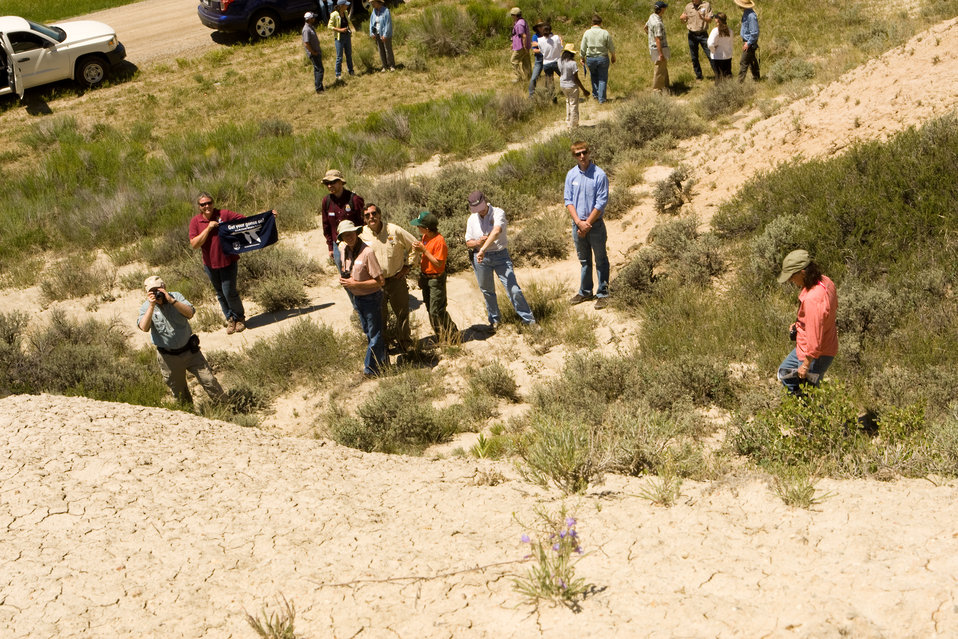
Colorado Rare Plant Conservation Initiative

The Colorado Rare Plant Conservation Initiative (RPCI) is a partnership of 23 statewide and regional agencies, private organizations, and academic institutions working to conserve 121 rare plants in Colorado. As part of these efforts the group developed the Colorado Rare Plant Conservation Strategy, developed Best Management Practices to reduce energy development impacts, addressed climate change, and developed focused strategies for the conservation of individual species at eight priority landscapes. The group has also worked to coordinate volunteer efforts for plant conservation across the state.